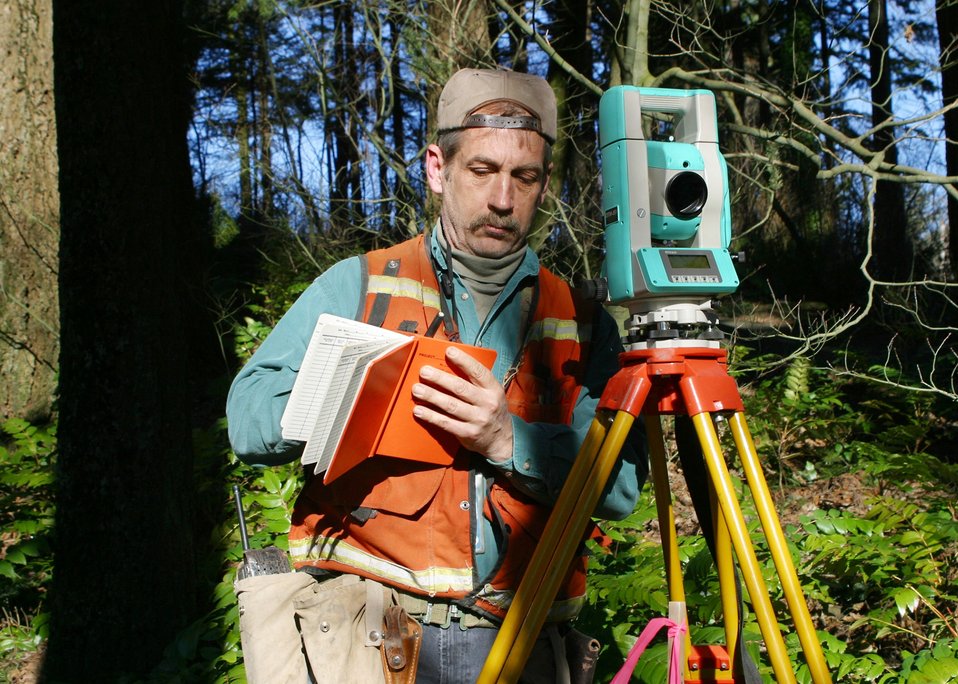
Steve Kaiser Land Surveyor takes field notes near the Willamette Stone survey Marker. BLM is the only government agency who can do legal public land boundary surveys. 2-7-03 Photo: John Craig